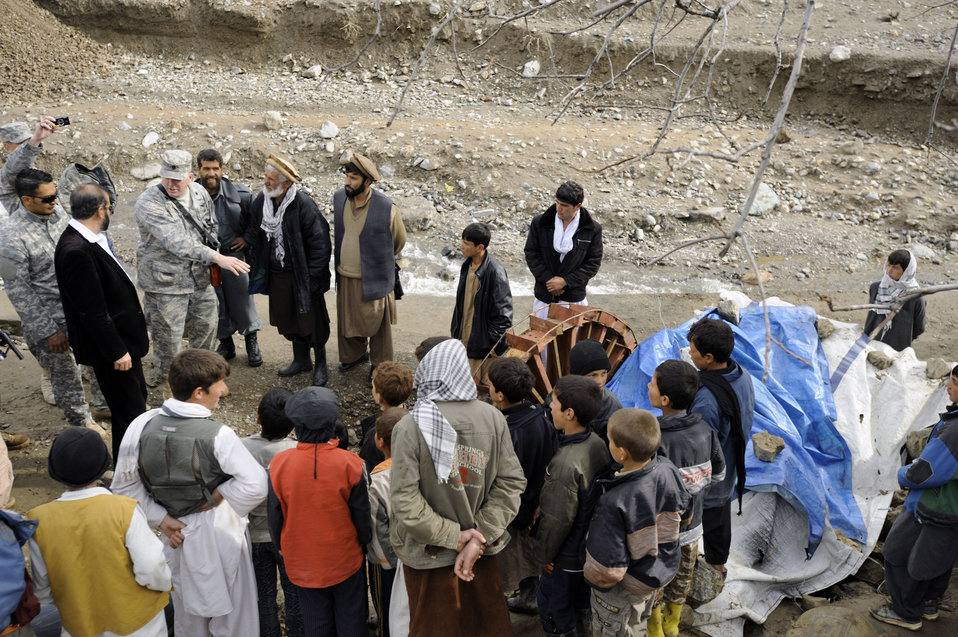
American servicemembers visit Afghan villagers

Lt. Col. Mark Stratton talks to villagers about a micro hydro pump provided by the Panjshir Provincial Reconstruction Team in Afghanistan March 4. The micro hydro uses water to create power for the village. Colonel Stratton is the Panjshir PRT commander.